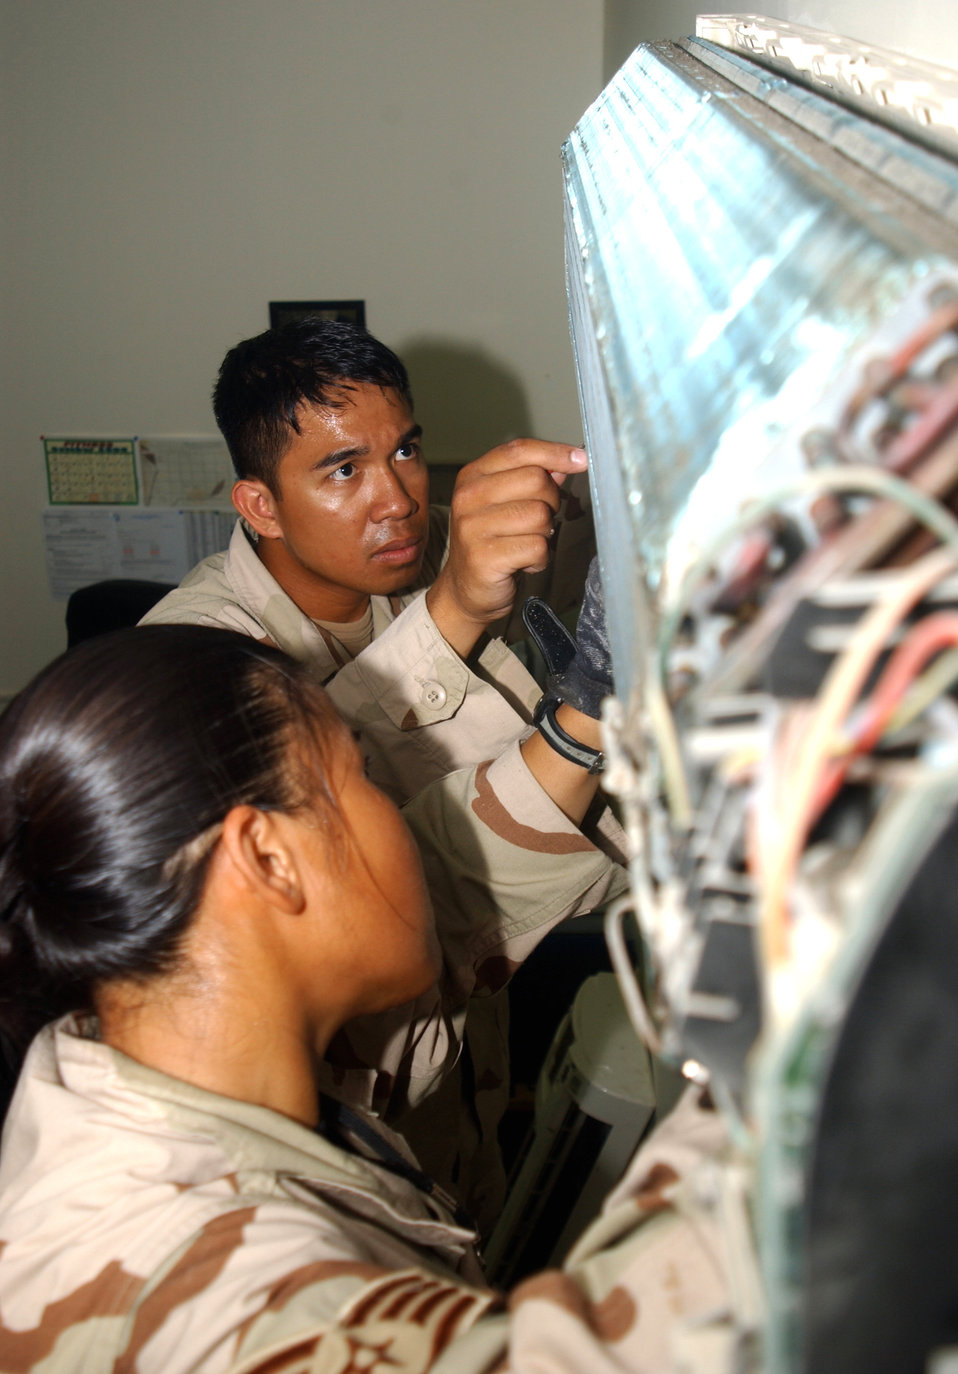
Keeping it cool

Senior Airman Ernesto Estalilla and Staff Sgt. Kathryn Santos repair a wall-mounted air-conditioning unit in the third-country national escort office at this deployed location in Southwest Asia Oct. 11. Both Airmen are part of a nine-person team that maintains better than 3,000 air conditioning units here for about 1,500 people and the 380th Air Expedtionary Wing. Both Airmen are assigned to the 380th Expeditionary Civil Engineer Squadron and deployed from Yokota Air Base, Japan.